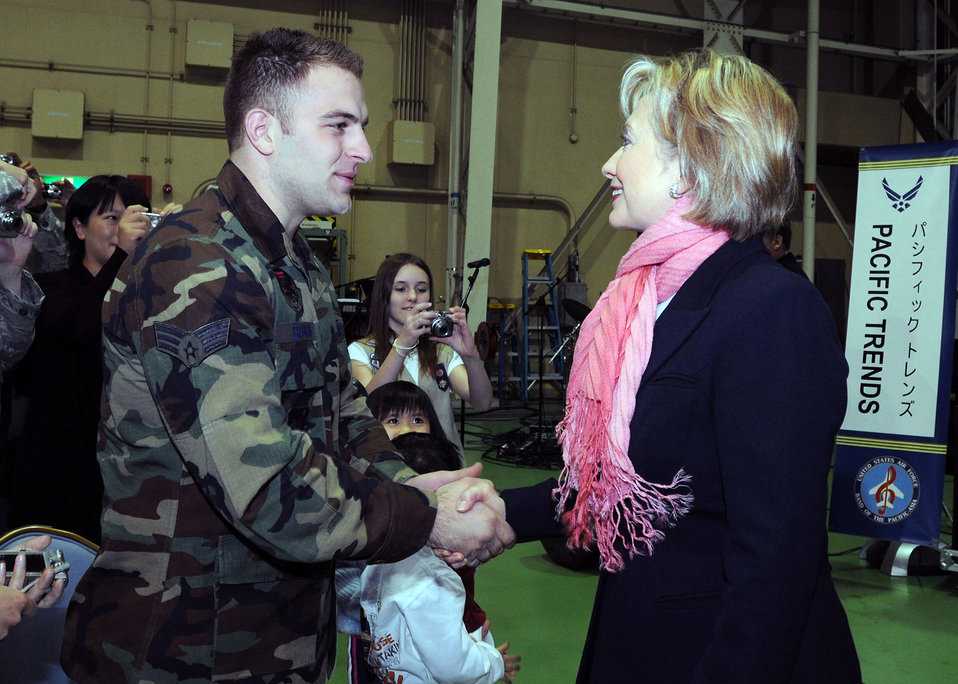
Secretary of state visits Yokota

Secretary of State Hillary Clinton greets military members and their families Feb. 22 at Yokota Air Base, Japan. She took the opportunity to visit during a refueling stop there on her way back to Washington D.C.